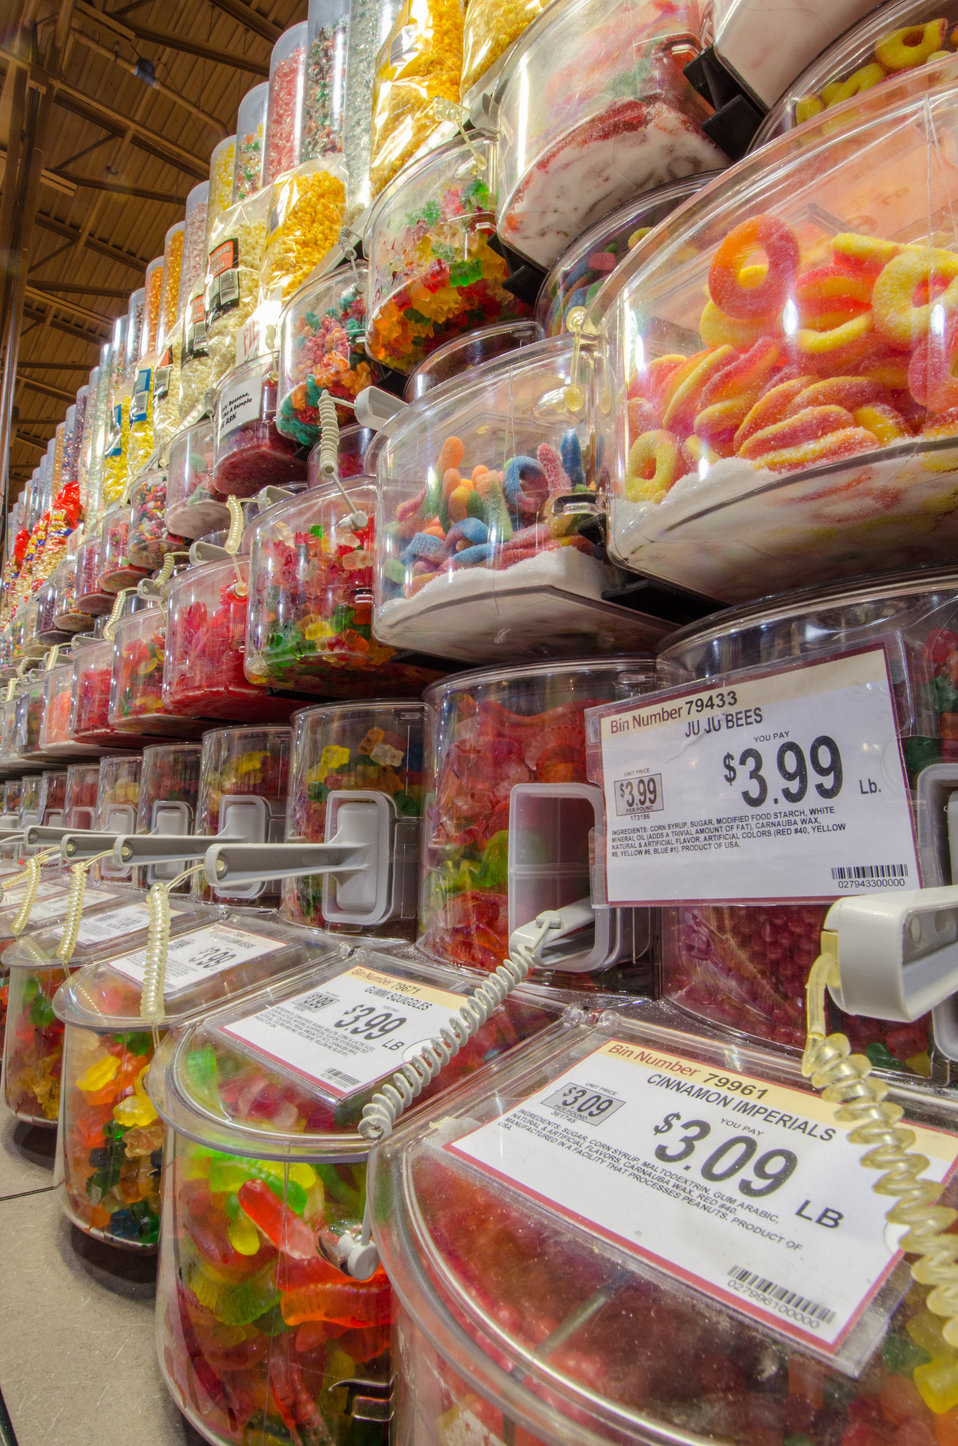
Candy in self-serve bins, at a grocery store in Fairfax, Virginia, on March 3, 2011.